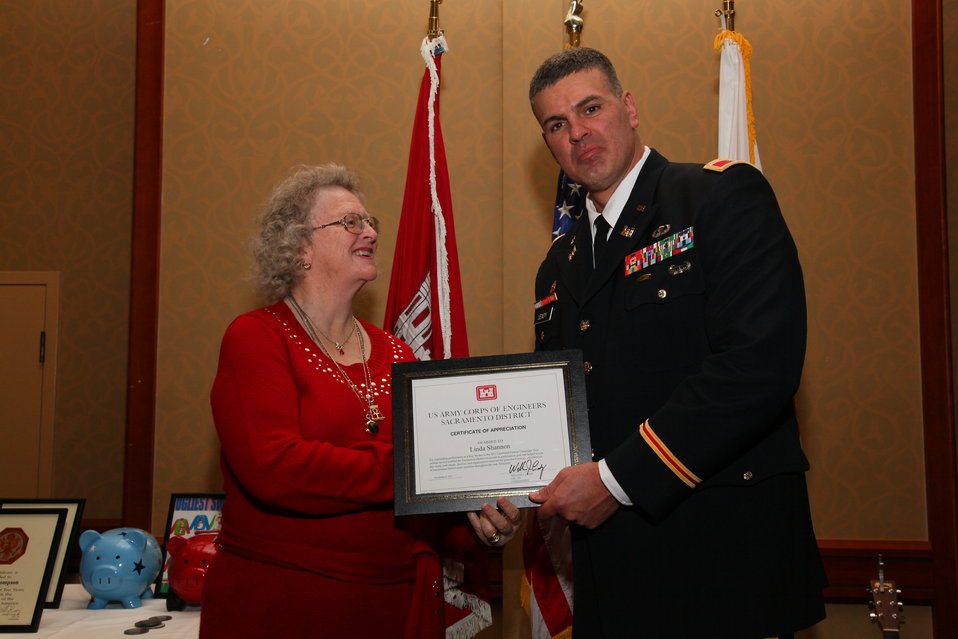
Sacramento District Holiday Party 2011